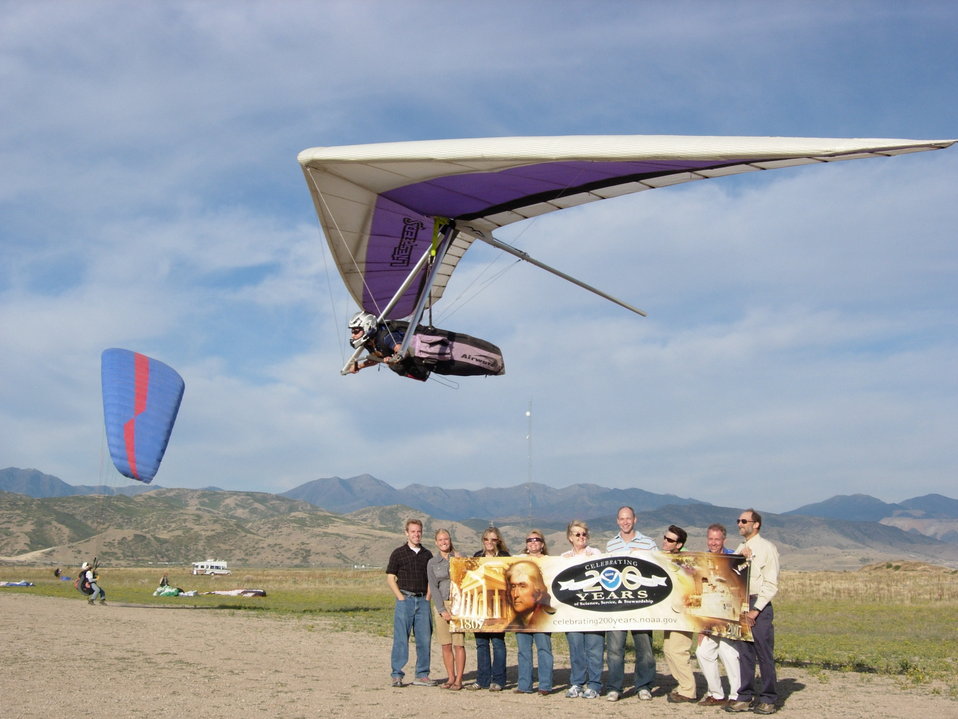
Hundreds of Utah glider pilots rely daily on NOAA's National Weather Service Salt Lake City aviation services, including soaring forecasts and observed surface and upper air wind information. Here at the Flight Park State Recreation Area, hang glider and paraglider pilots such as Lisa Verzella, former NOAA Student intern, take advantage of the consistent south winds in this area.